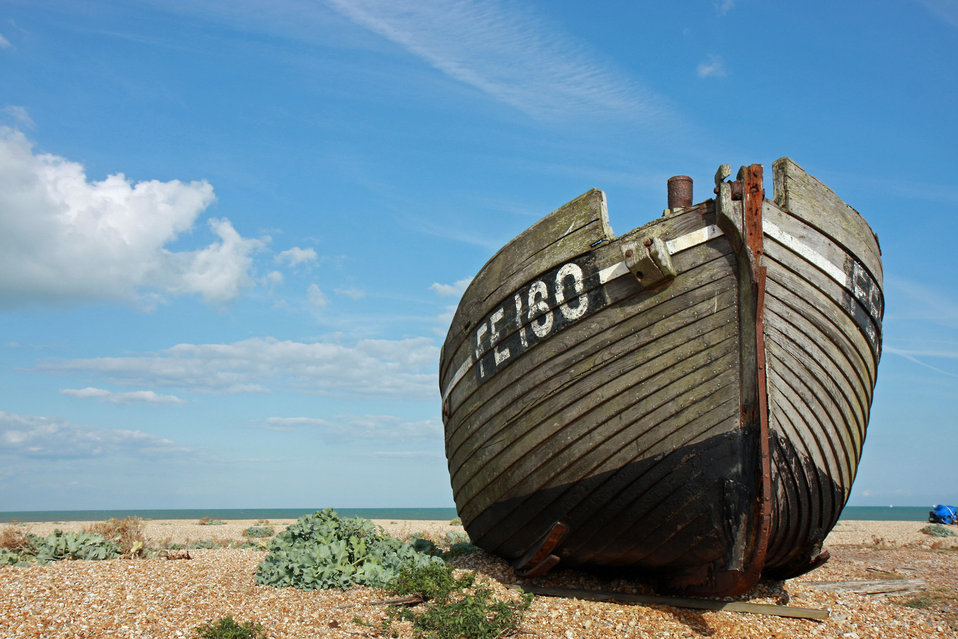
Wooden fishing boat

Big massive wooden fishing boat on the beach image.